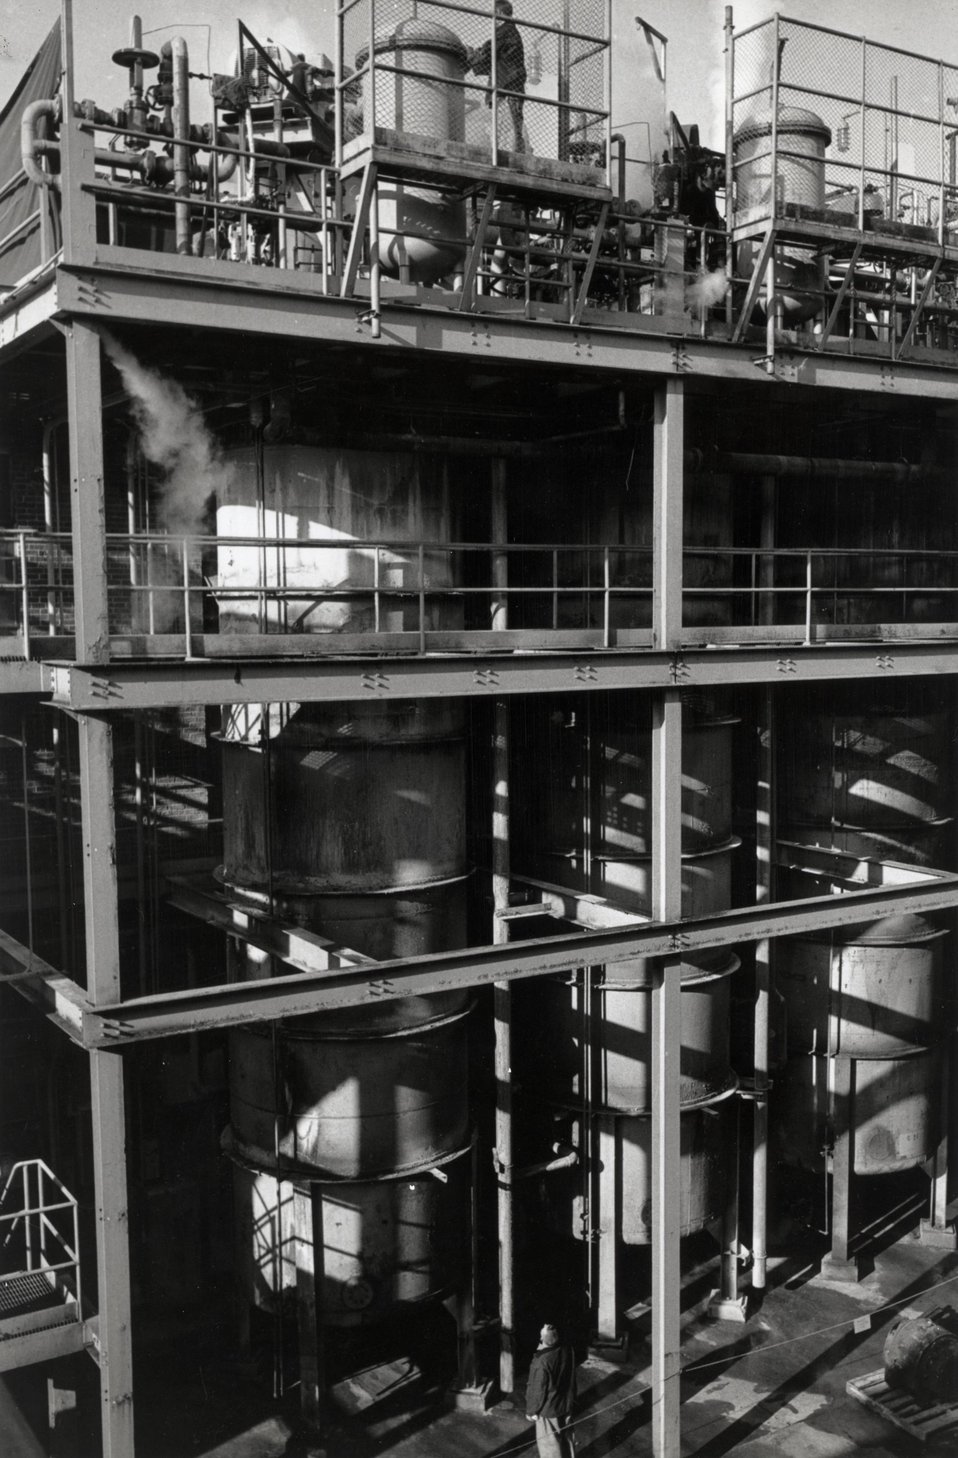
Penicillin, the first antibiotic for general use and one of the most valuable drugs known to man, is one of the many medicines that can be made from coal chemicals that are recovered as coal is burned to make coke.